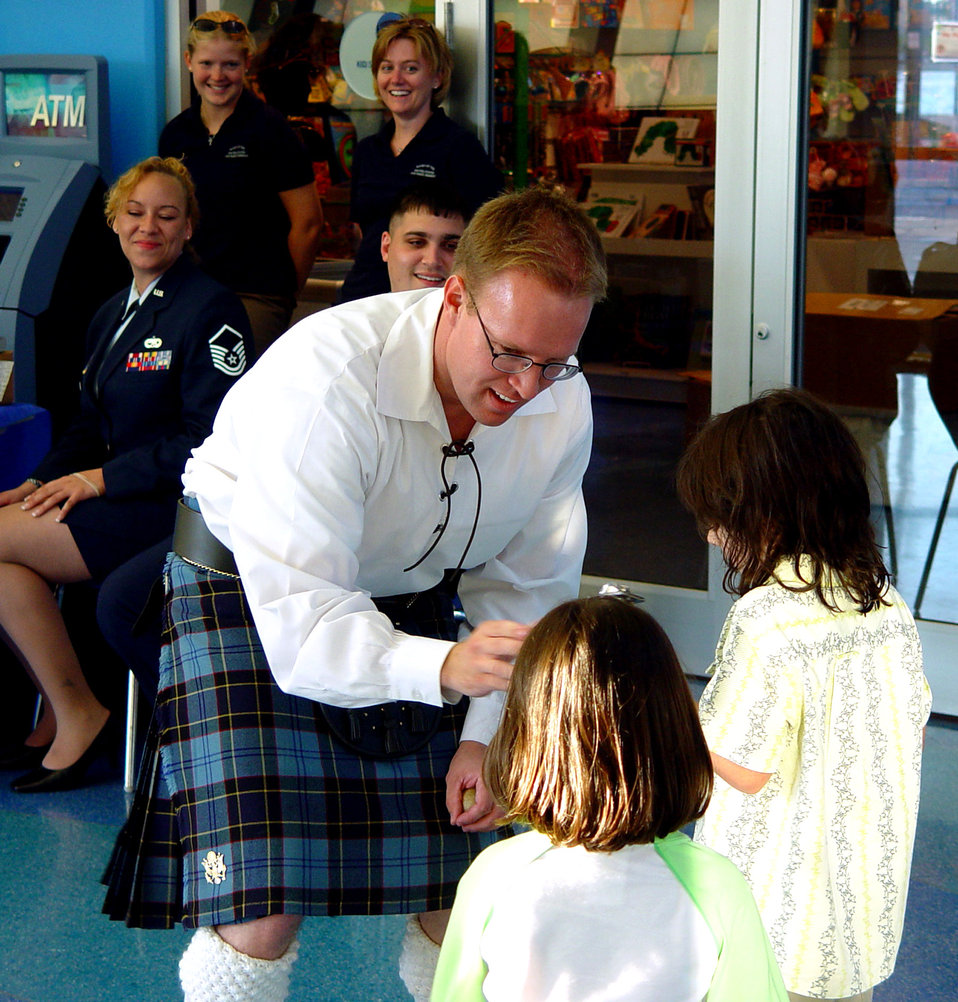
Air Force Reserve Band spreads goodwill

Senior Airman Mike Henrie, a member of the Band of the Air Force Reserve's Celtic ensemble, Southern Aire, shows two little girls how to use one of his percussion instruments during a performance at Miami Children's Museum on May 19, 2006. The Band of the Air Force Reserve, from Robins Air Force Base, Ga., performed nine times in South Florida as part of a community outreach project.